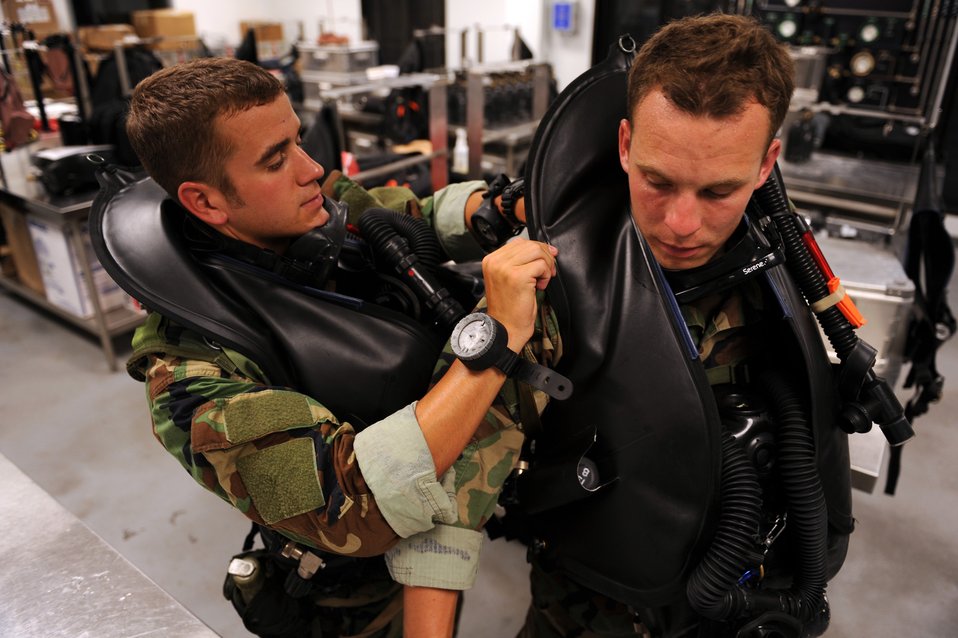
Combat Controllers

Airmen assist their wingmen with dive gear before heading out for an early morning dive during their combat dive course June 10, 2010, at Panama City Beach, Fla. The Airmen are combat controllers-in-training assigned to the 342nd Training Squadron Det. 2.